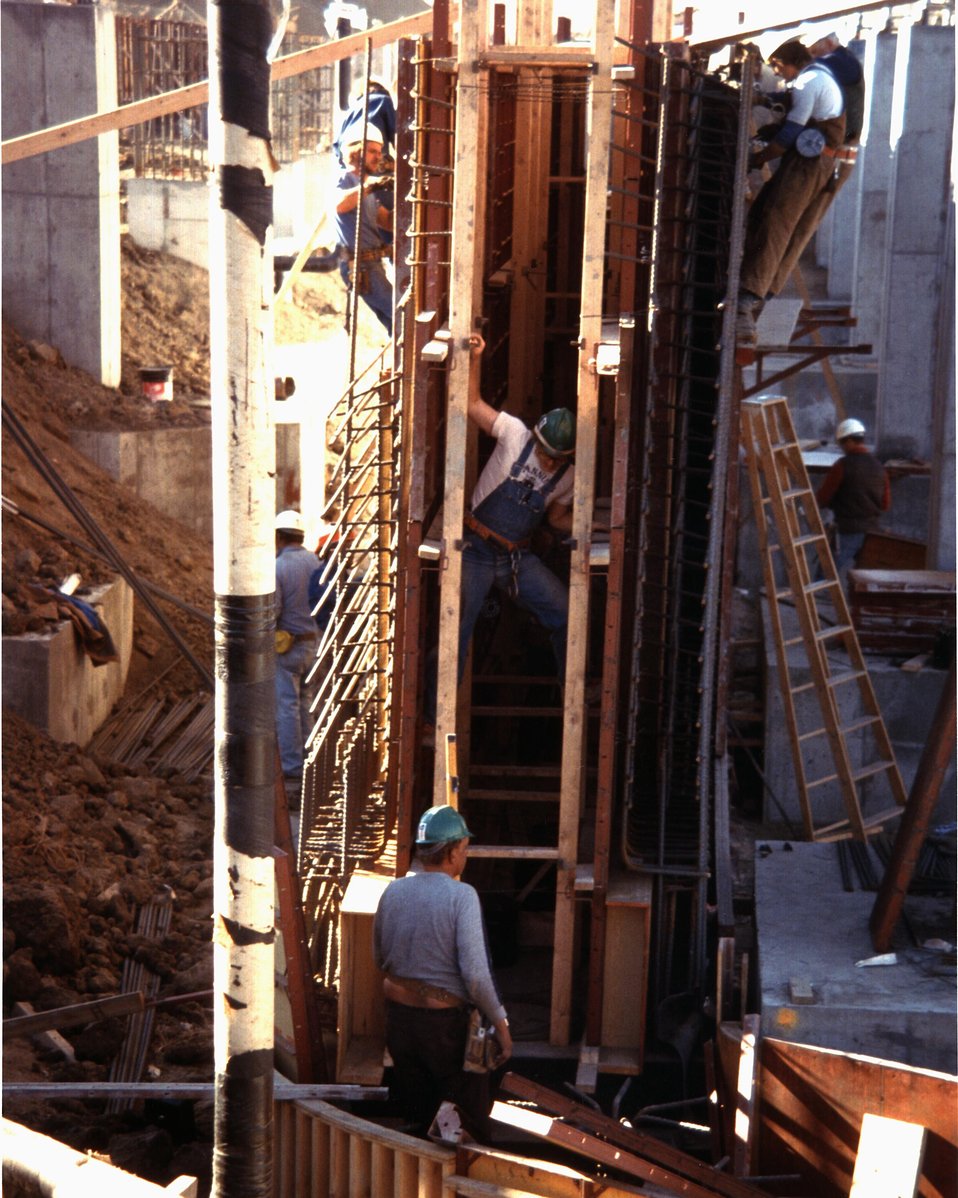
CONSTRUCTION OF THE FOUNDATION OF THE GREAT PLAINS PROJECT.

THE GREAT PLAINS COAL GASIFICATION PLANT WILL PRODUCE AN AVERAGE OF 125 MILLION CUBIC FEET PER DAY OF SYNTHETIC HIGH-BTU GAS. THIS GAS, A DIRECT SUBSTITUTE FOR NATURAL GAS, IS TO BE MARKETED THROUGH AN INTERSTATE NETWORK OF GAS PIPELINES. APPROXIMATELY 14,000 TONS OF LIGNITE WILL BE FED EACH DAY INTO 12 LURGI GASIFIERS (2 ADDITIONAL GASIFIERS WILL BE KEPT ON STANDBY). GAS EXITING THE GASIFIERS WILL BE COOLED, CLEANED OF SULFUR, AMMONIA, AND OTHER IMPURITIES, THEN UPGRADED TO A PIPELINE QUALITY SYNTHETIC NATURAL GAS. THE LURGI PROCESS WILL USE THE LARGER-SIZED COAL FROM THE PLANT'S COAL CRUSHING OPERATION WHILE SOME 8,000 TONS PER DAY OF THE SMALLER SIZE COAL WILL BE SOLD TO AN ADJACENT STEAM ELECTRIC GENERATING PLANT. THE GREAT PLAINS PLANT WILL ALSO PRODUCE 93 TONS PER DAY OF AMMONIA AND 85 TONS PER DAY OF SULPHUR.